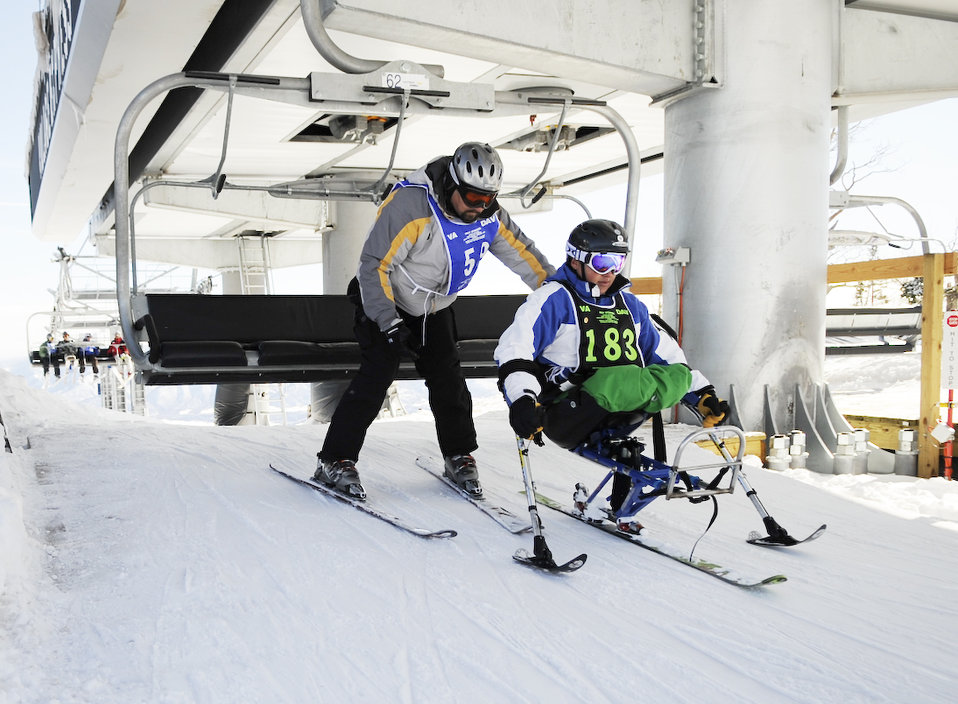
Expanding wounded warrior athletics

The U.S. Paralympics Division of the U.S. Olympic Committee has partnered with the Department of Defense, the Department of Veterans Affairs and community programs nationwide to support the rehabilitation of injured military men and women through sport and physical activity.